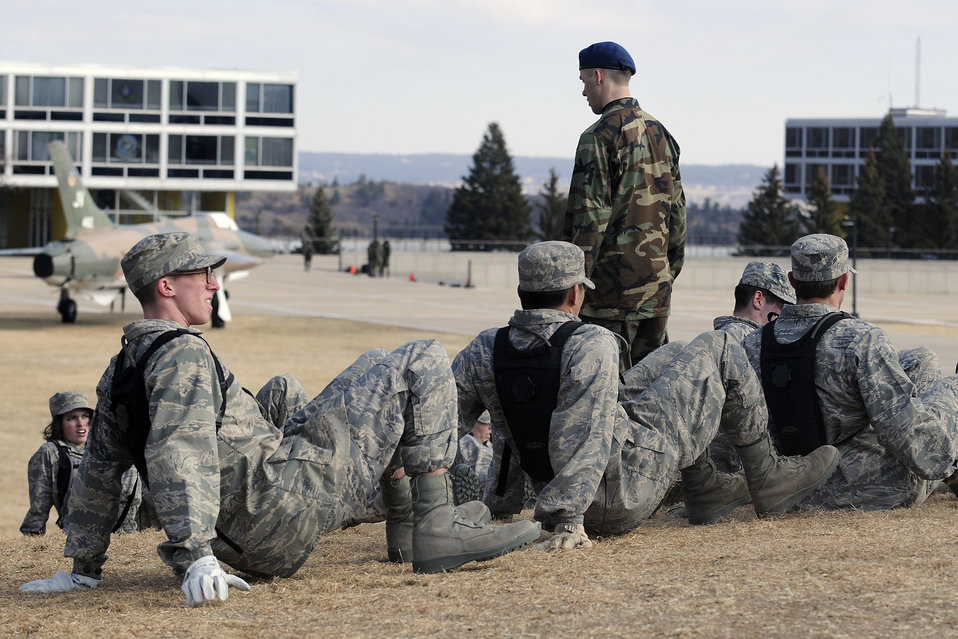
US Air Force Academy, CO

Under the watchful eye of an upperclassmen, members of the Class of 2012 perform a crawl up Spirit Hill on the U.S. Air Force Academy's Terrazzo during Recognition. Recognition marks the transition of the fourth classmen to upper class status. It is the ceremonial acknowledgement that the fourth class has successfully met the training requirements expected of it, and is prepared to continue its four-year journey through the Academy.